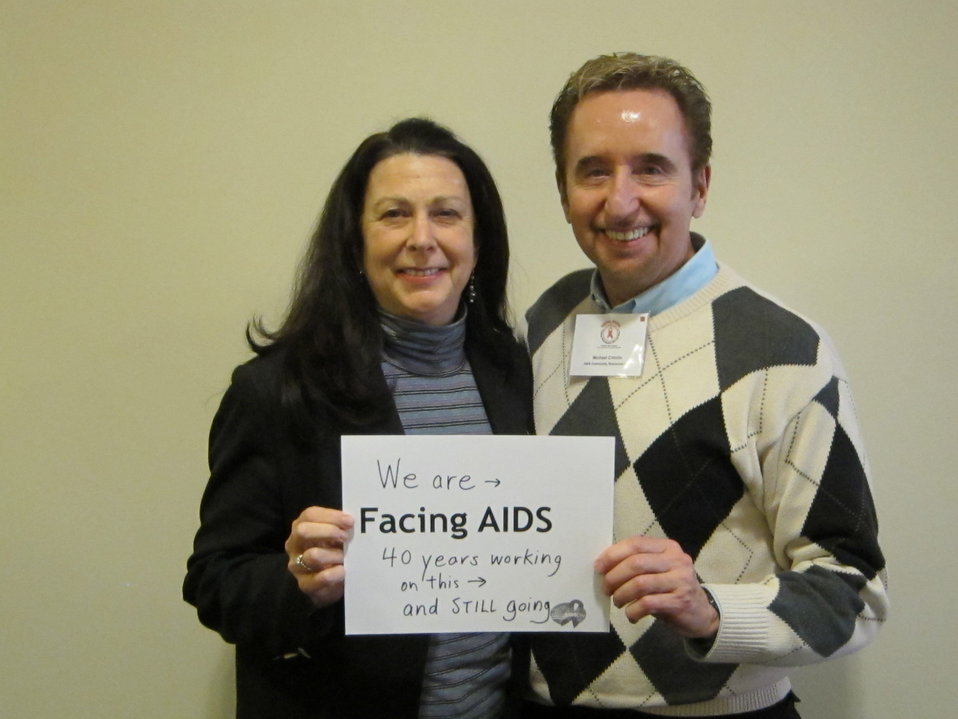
We are Facing AIDS 40 years workign on this and still going.